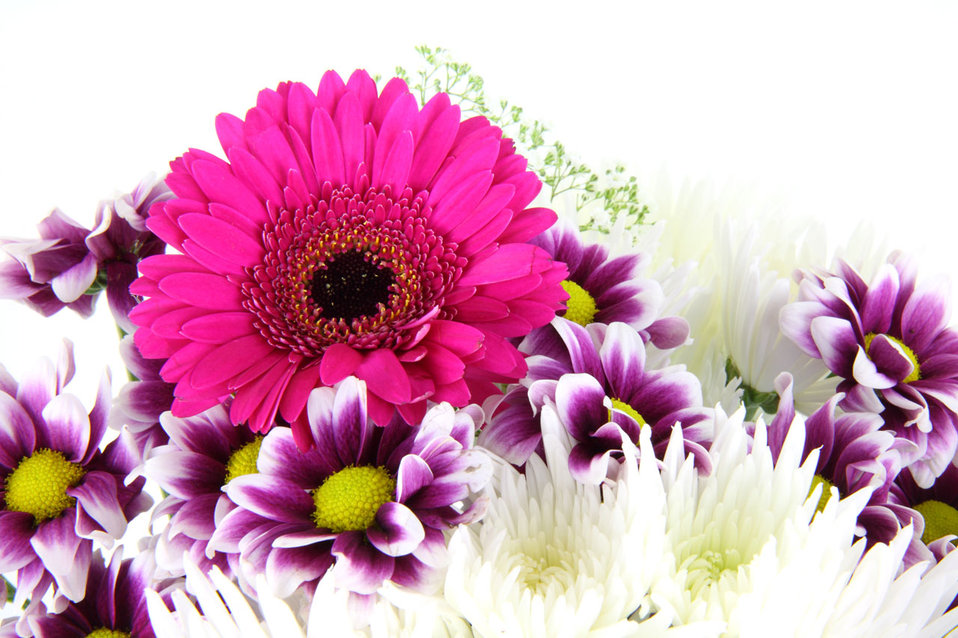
Purple flower bouquet

Pink purple and white flower bouquet.